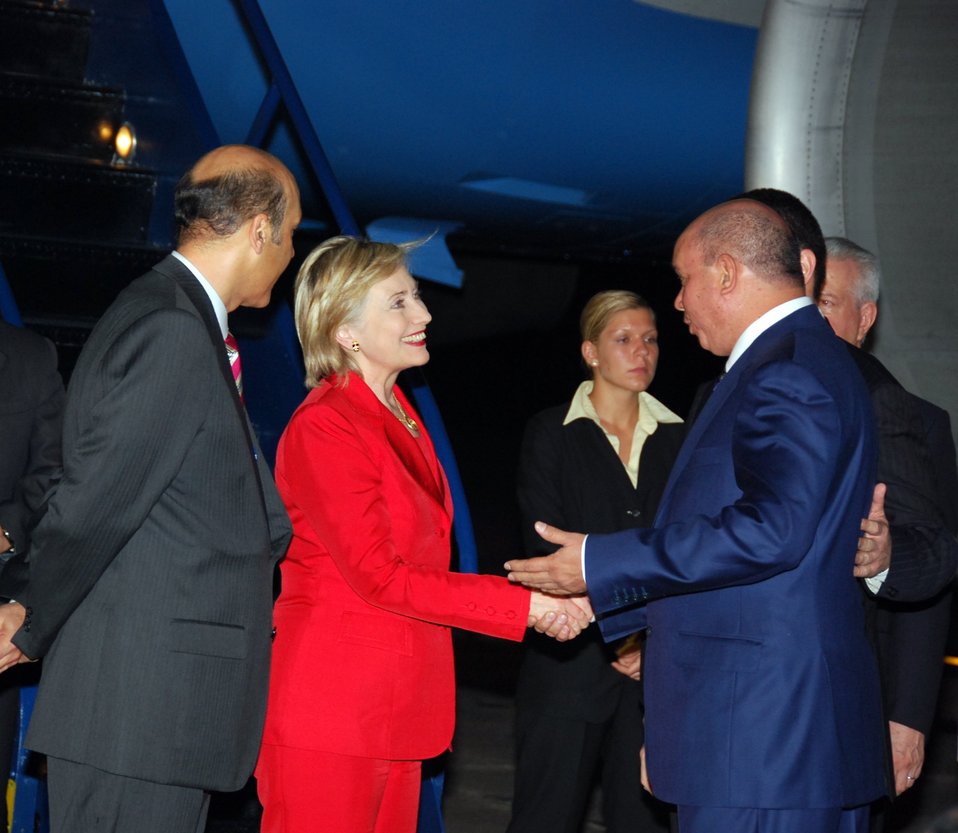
Secretary Clinton Arrives in Honduras

U.S. Secretary of State Hillary Rodham Clinton is greeted by Honduran Commisioner Vicepresident Aristides Mejia at her arrival at Armando Escalon Airbase in San Pedro Sula, Honduras, June 1, 2009. From left to right: Ambassador Hugo Llorens, Secretary Clinton, Commissioner Vicepresident Aristides Mejia, and San Pedro Sula Major Rodolfo Padilla Sunseri.